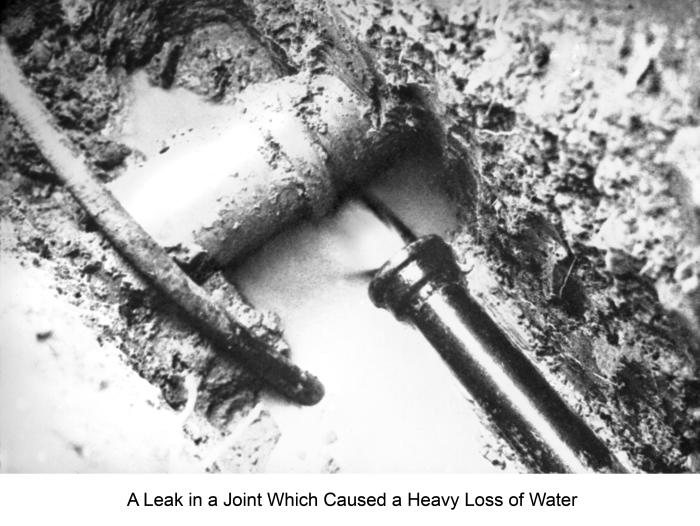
Typical of water and sewer line crossings, this historic 1939 photograph revealed structural details that can still be found in any contemporary Minnesotan municipality. A leak in the water main close to the joint in a sewer pipe makes contamination of the water supply possible. This is especially true when a vacuum occurs in the water pipe.